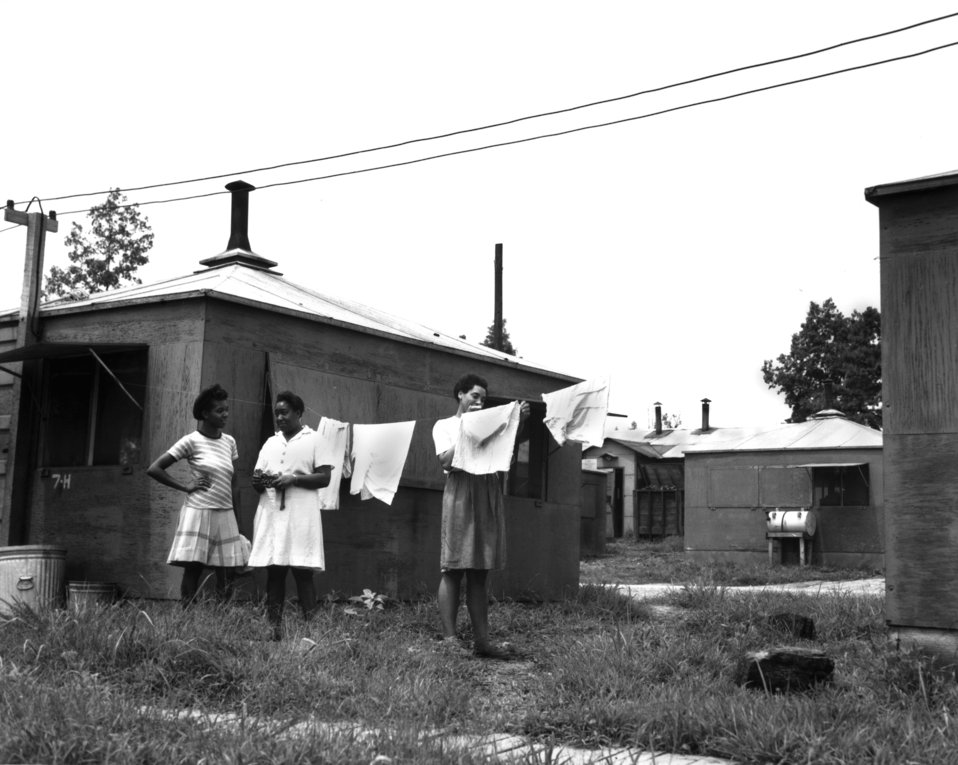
Housing (Hutment) - Oak Ridge

PRO918 DOE photo Ed Westcott

Housing (Hutment) - Oak Ridge Tennessee 1945